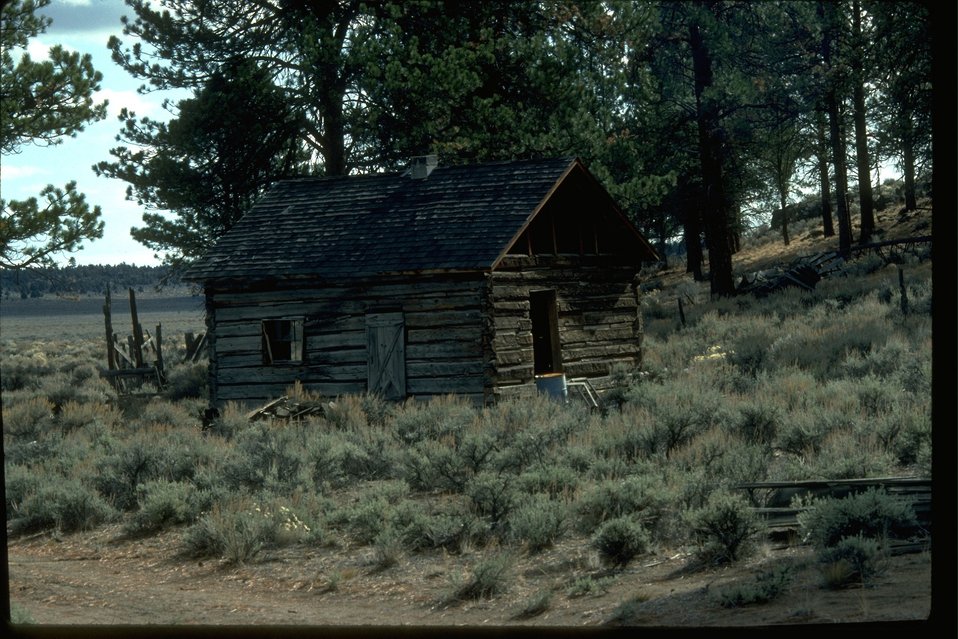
Cabin at sunset.